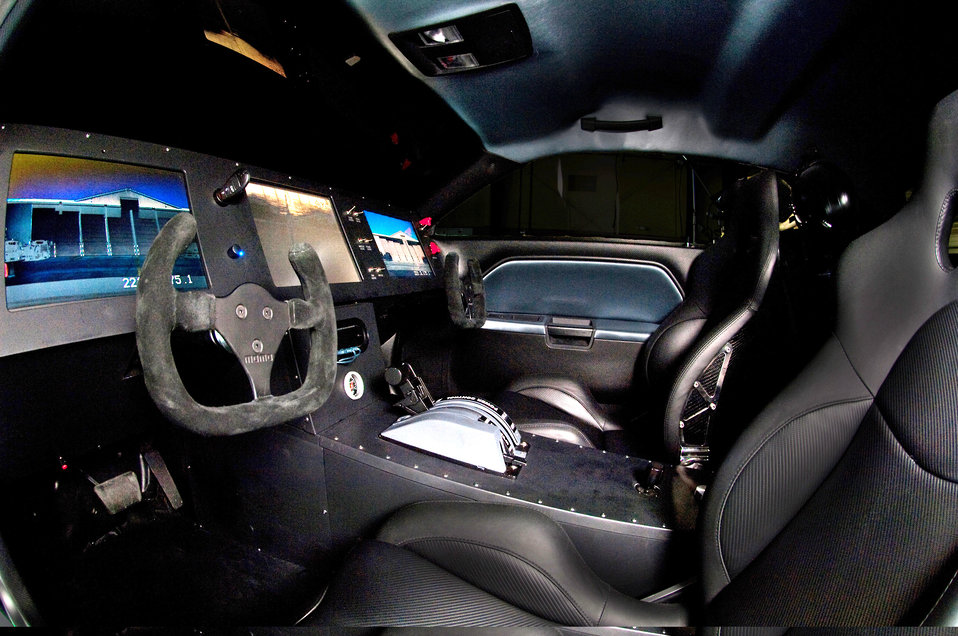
Super Car Tour

The stealth-black Air Force Challenger 'Vapor' interior features aircraft style controls, a passenger side steering wheel, GPS tracking, night and thermal vision via a film on the front windshield, and the most technologically-advanced computer system with remote control UAV-type access from anywhere in the world utilizing the Internet. The 'Vapor' also comes with two custom flight helmets in line with the Air Force theme of the vehicle. The Vapor is one of the Air Force's newest mobile marketing assets and will be touring high schools and a variety of Air Force sponsored events as part of the 2009 Super Car Tour.